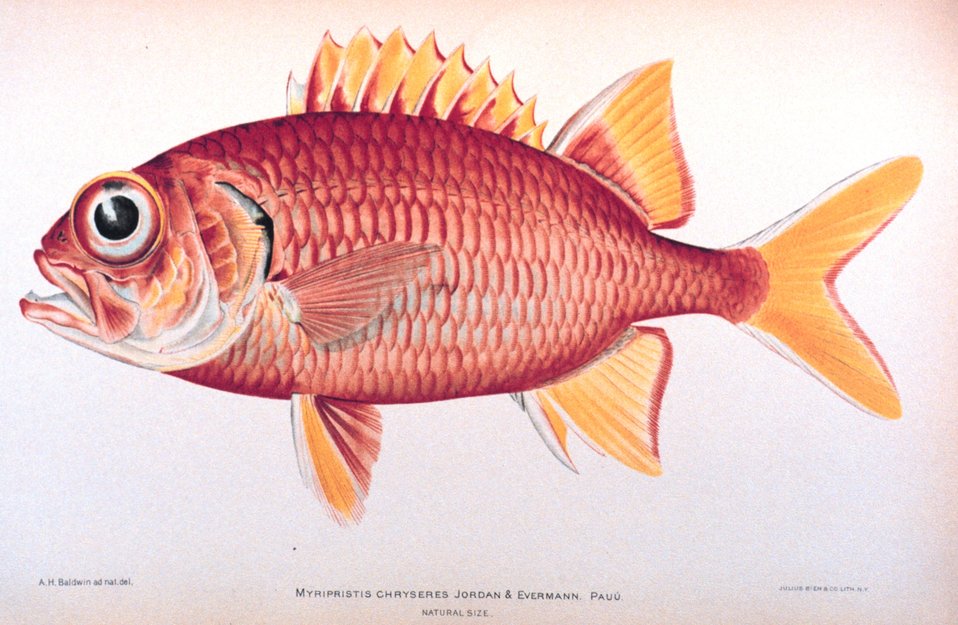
Myripristis chryseres Jordan & Evermann. Pau'u. In: 'The Shore Fishes of the Hawaiian Islands, with a General Account of the Fish Fauna', by David Starr Jordan and Barton Warren Evermann. Bulletin of the United States Fish Commission, Vol. XXIII, for 1903. Part I. P. 574, Plate VI.